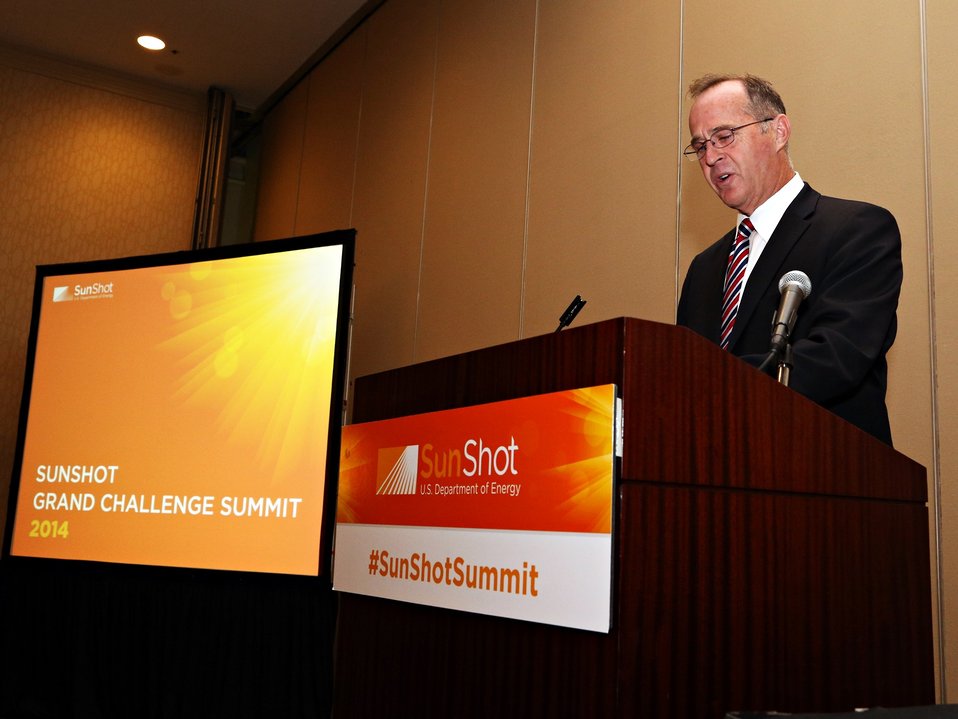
Opening Session 6

Anaheim Mayor Tom Tait speaking at the opening session.